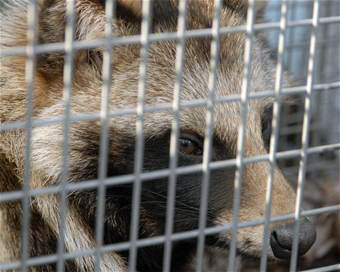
Yokota trespassers caught, detained, released

This raccoon dog was captured Jan. 6 and released Jan. 8 in a forest at the Tama Hills Recreation Area on Yokota Air Base, Japan. The 374th Civil Engineer Squadron pest management office catches and relocates wild animals found on the base, keeping the airfield clear and the pet population safe.